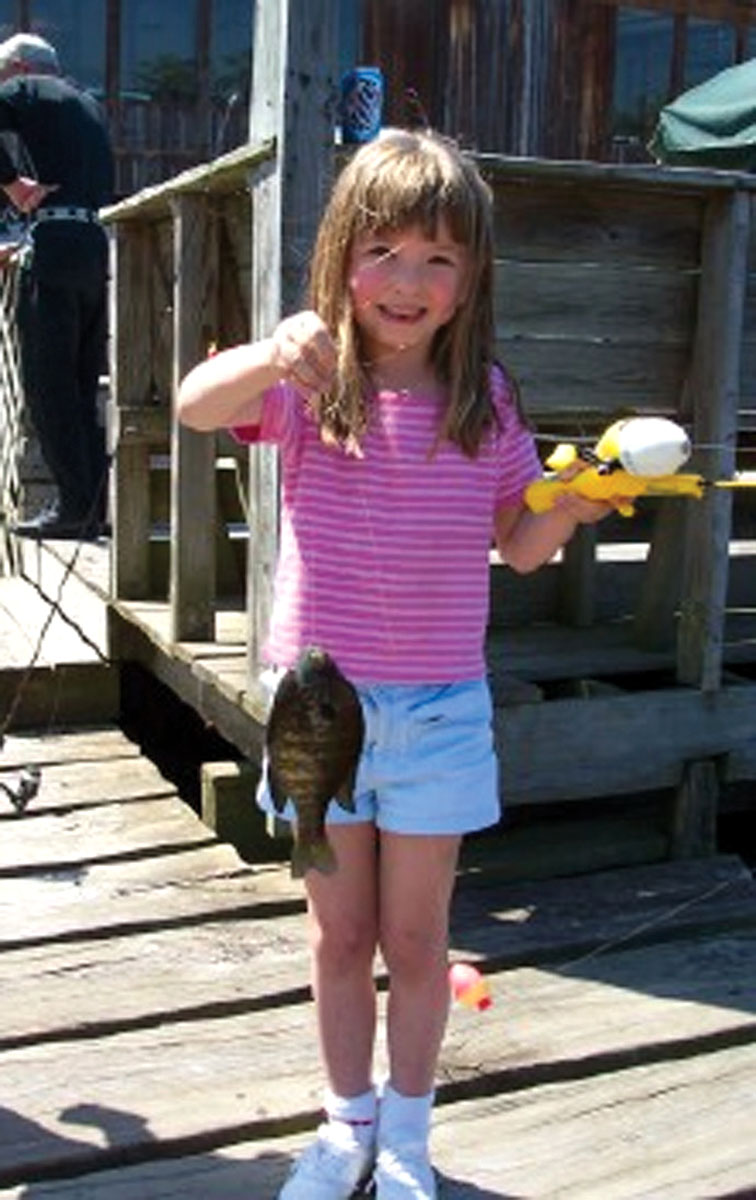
8 year old pulls drowning toddler to safety

Sarah Ellingwood poses with her catch of the day. She recently saved a toddler from drowning in Lake Ouachita, Ark. Sarah is the daughter of Senior Master Sgt. Darren Ellingwood of the 93rd Intelligence Flight from Barksdale Air Force Base, La.